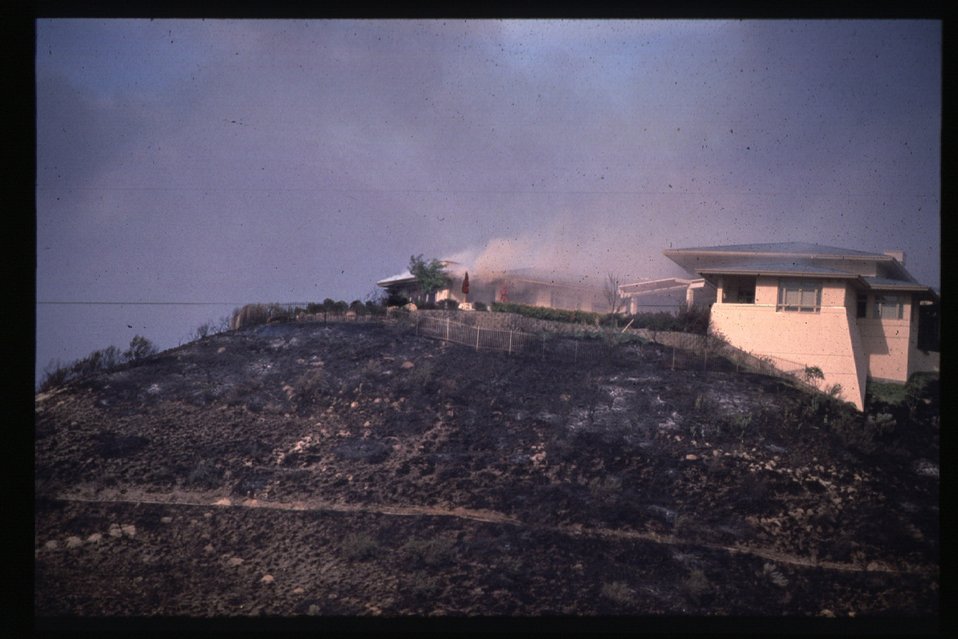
8th Street Fire Boise Front Foothills Four Rivers Field Office LSRD Lower Snake River District